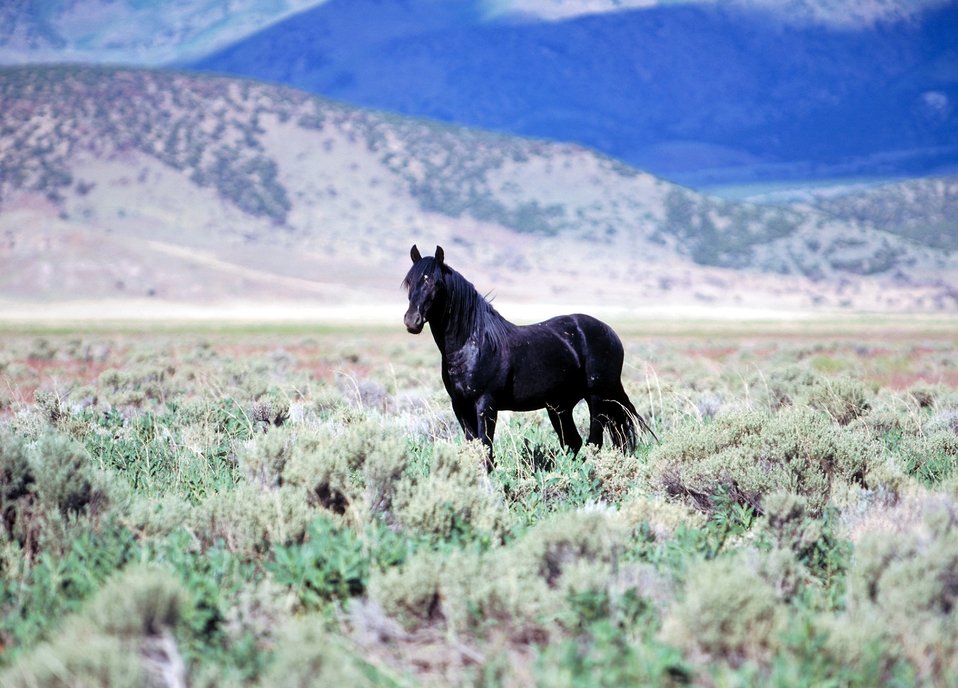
Onaqui Herd near Dugway, Utah.